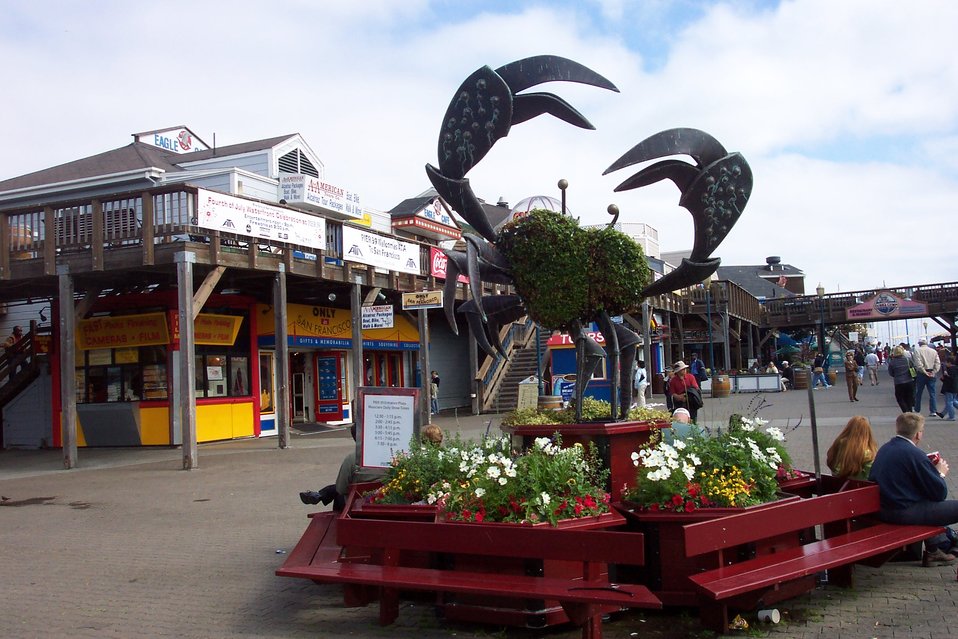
A crab sculpture on Pier 39, near Fisherman's Wharf.